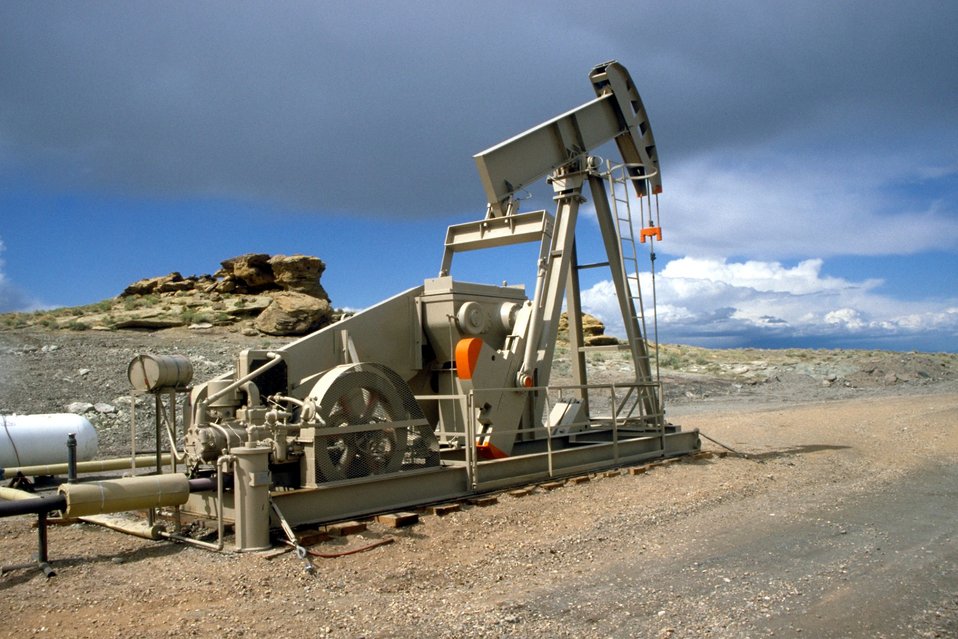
Pump unit producing coal bed methane near Price, Utah.